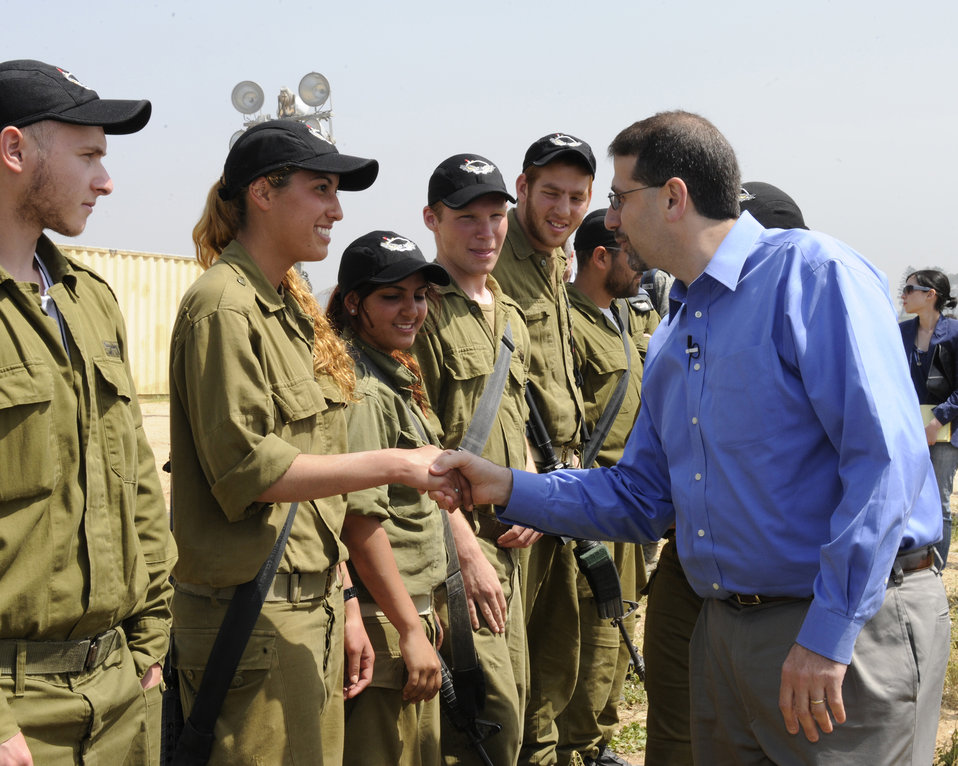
Ambassador Shapiro Meets With Israeli Soldiers

U.S. Ambassador to Israel Daniel Shapiro meets with Israeli Air Force Air Defense Forces Commander Brig Gen. Doron Gavish, battery commander Capt. Revital Uzan, and battery soldiers during his visit to the site of the newly-deployed Iron Dome battery in southern Israel on April 5, 2012.